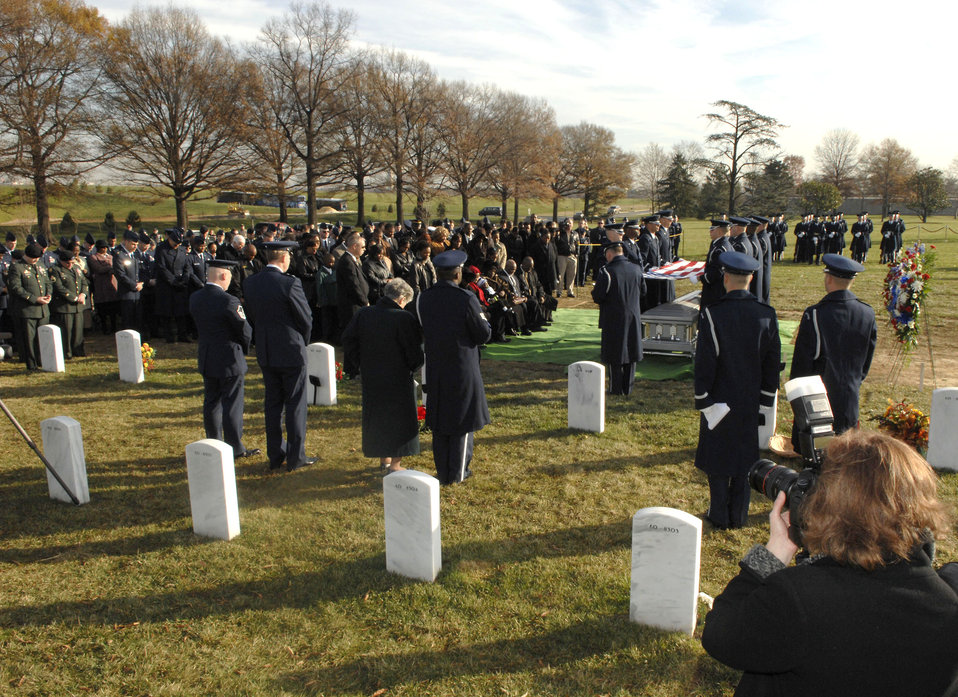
One final salute

More than 200 friends and relatives gathered to pay their respects to Capt. Kermit Evans Dec. 12 at Arlington National Cemetery. Captain Evans was a member of the 27th Civil Engineering Squadron Explosives Ordnance Disposal Flight at Cannon Air Force Base, N.M. He was deployed to Iraq when the helicopter he was a passenger in made an emergency landing and crashed. He was one of the four out of 16 who were killed as a result of the crash. He is srvived by his wife, Perneatha, and Kermit Jr., their 13-month-old son.